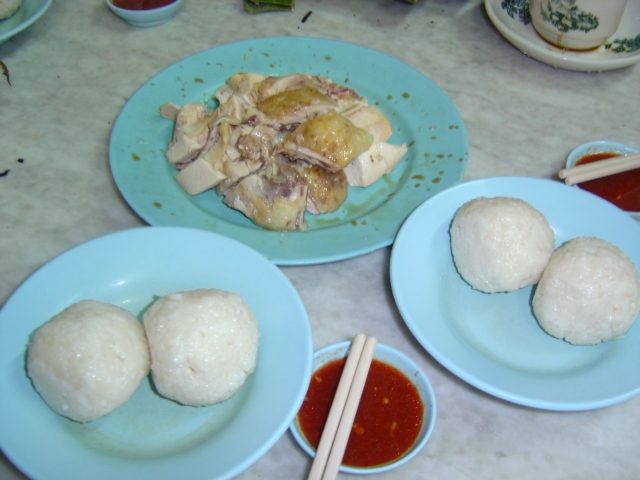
Hainanese Chicken Rice Ball AUTHOR: Lim Thiam Poh